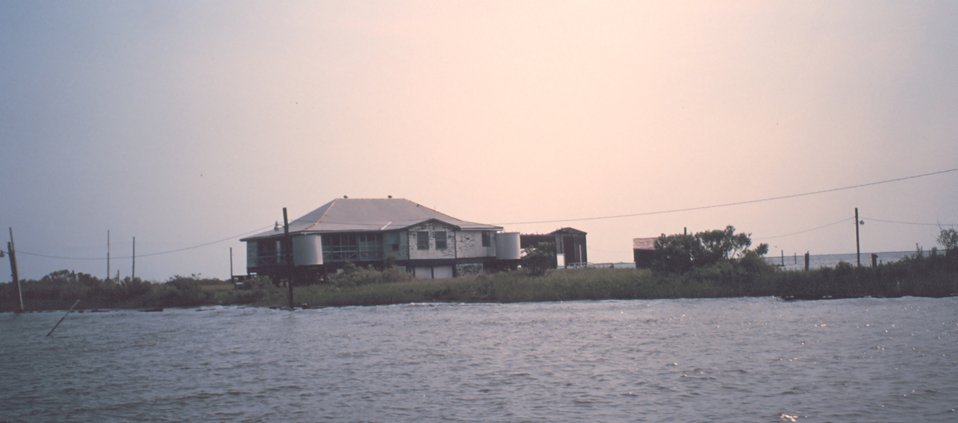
Hunting and fishing camp built on stilts - accessible only by boat although power lines have been run across the marsh.